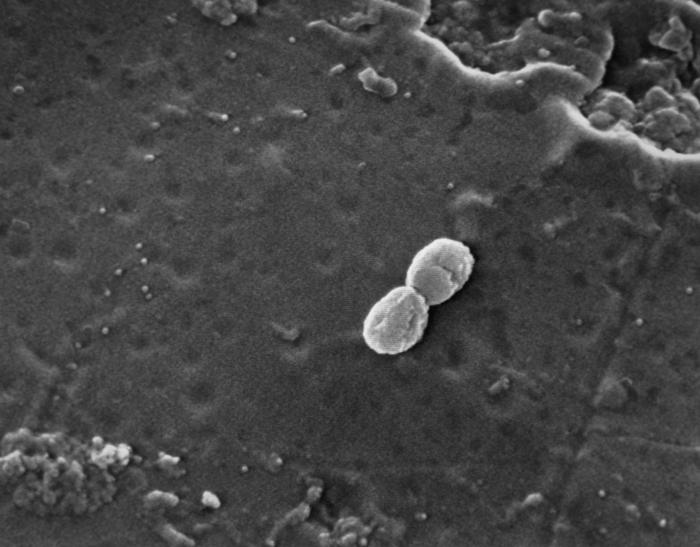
Scanning Electron Micrograph (SEM) of Acinetobacter anitratus